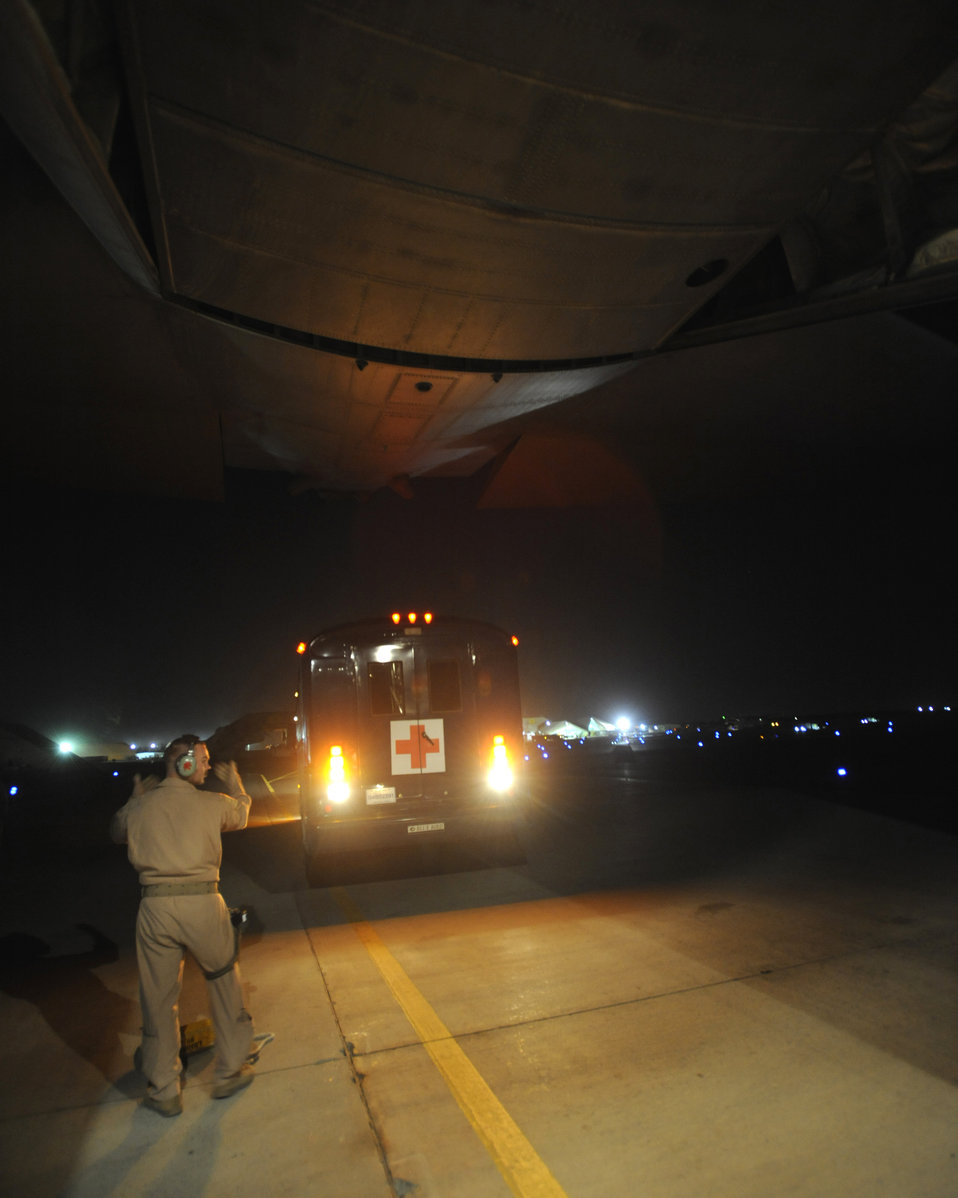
Flying medics provide theater-wide care

Staff Sgt. Josh Walker backs a medical bus to the rear of a C-130 Hercules to cross load patients during aeromedical operations April 23 over Southwest Asia. Sergeant Walker is a C-130 loadmaster from the 746th Expeditionary Airlift Squadron.